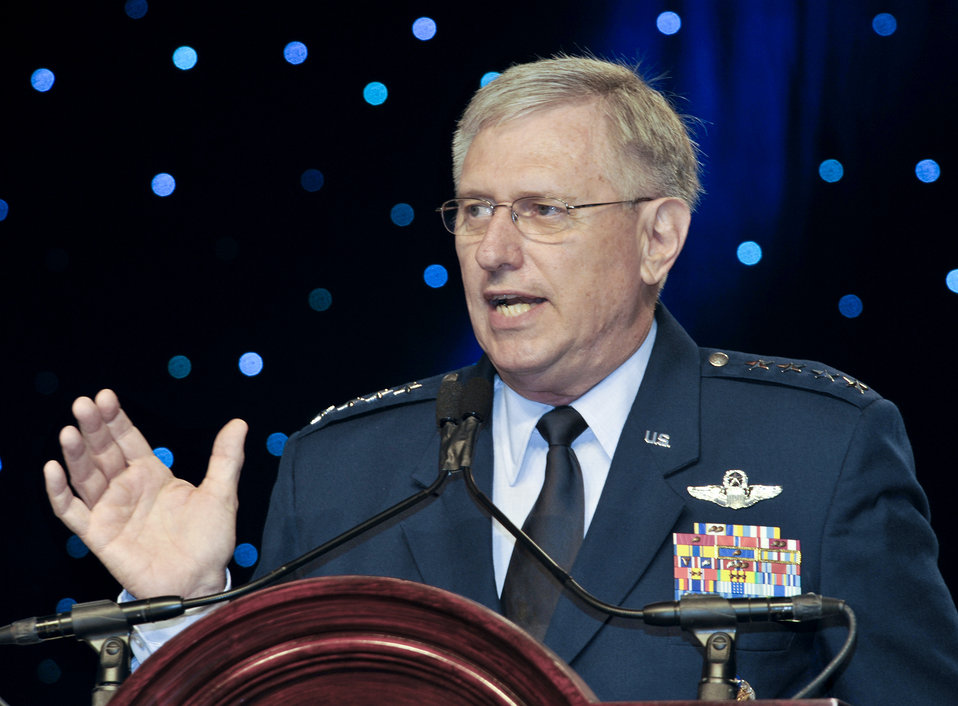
USAFE commander assesses future strategy at AFA

Gen. Roger Brady presented a briefing at the Air Force Association annual Air and Space Conference and Technology Exposition Sept. 13, 2010, in National Harbor at Oxon Hill, Md. Gen. Brady discussed present issues confronting his command and addressed the strategic need for the U.S. to continue its strong alliance with European allies and current geopolitical trends overseas. General Brady is the U.S. Air Forces Europe commander.